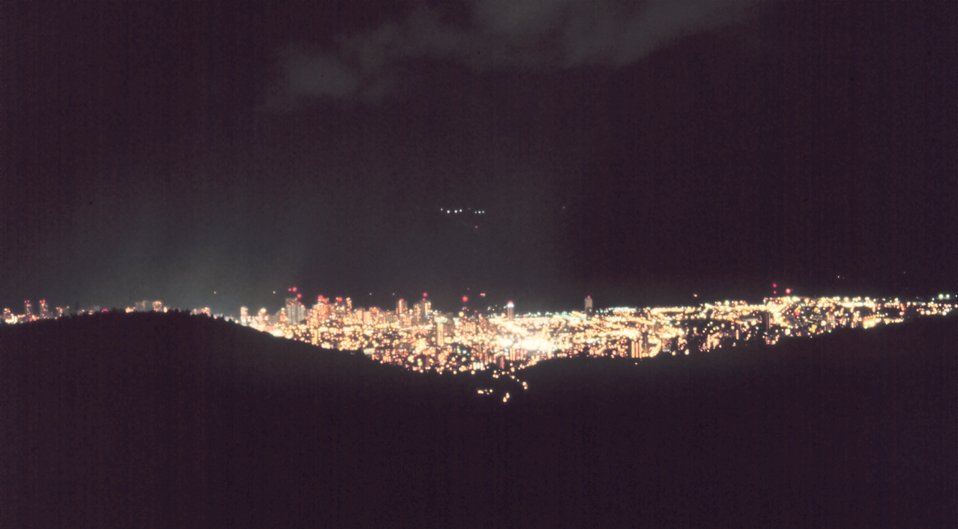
Overlooking Honolulu at night from Tantalus Drive.